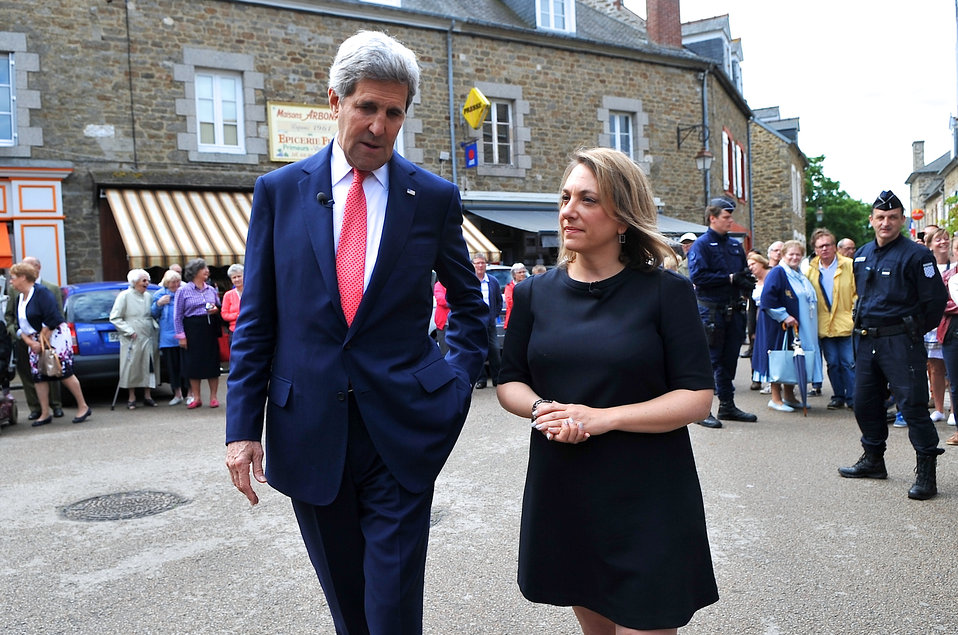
CNN Reporter Labott Interviews Secretary Kerry in Brittany Town

CNN Reporter Elise Labott interviews U.S. Secretary of State John Kerry in Saint Briac, France, on June 7, 2014. Labott and Secretary Kerry walked through Brittany, where they discussed the 70th anniversary of D-Day and the effort by local residents to save the remnants of the Secretary’s family home in France after the Nazis had destroyed it as American liberators approached in 1944.